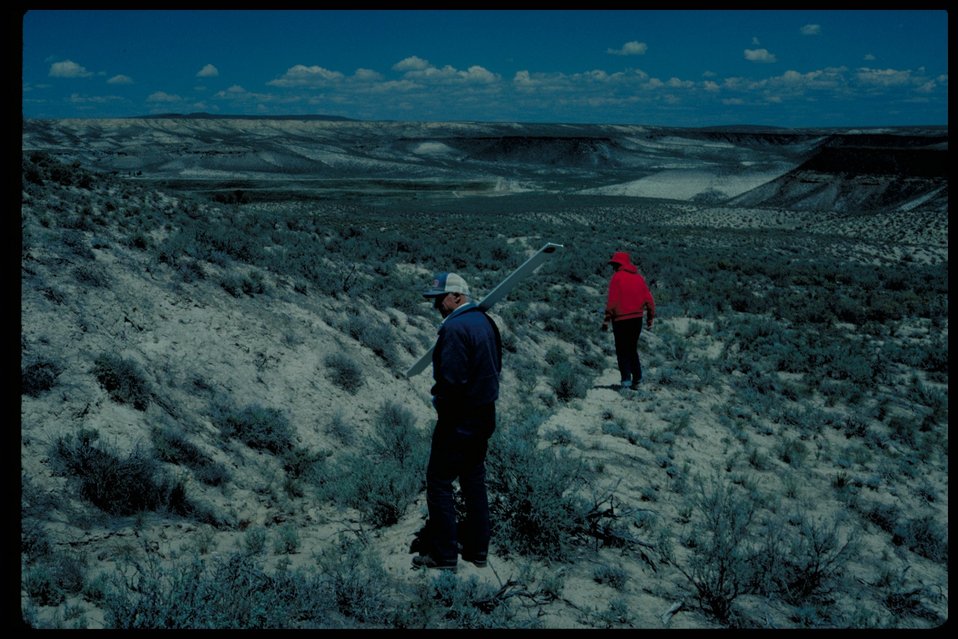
Oregon Trail south of Sinker Creek Lower Snake River District